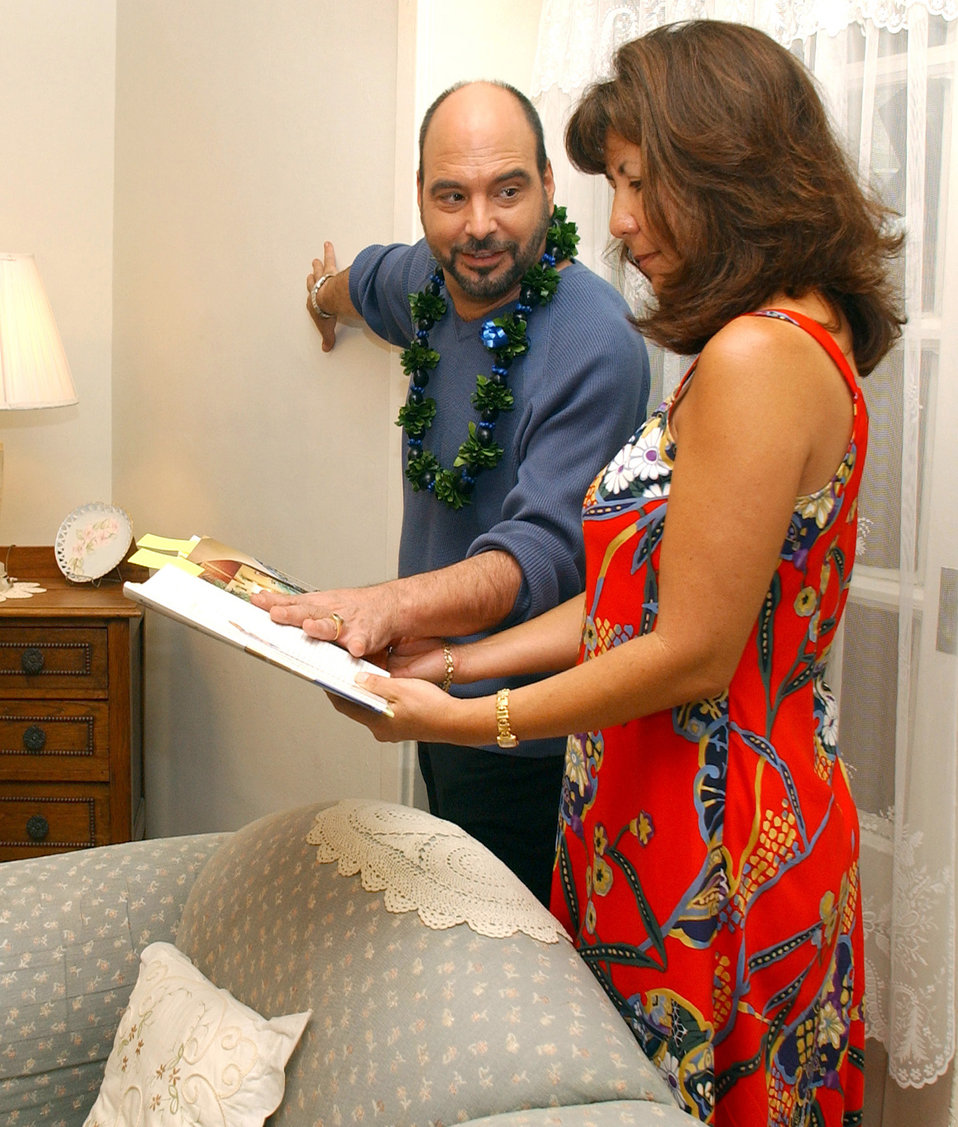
At home with Christopher Lowell

HICKAM AIR FORCE BASE, Hawaii -- Christopher Lowell, an interior designer and host of